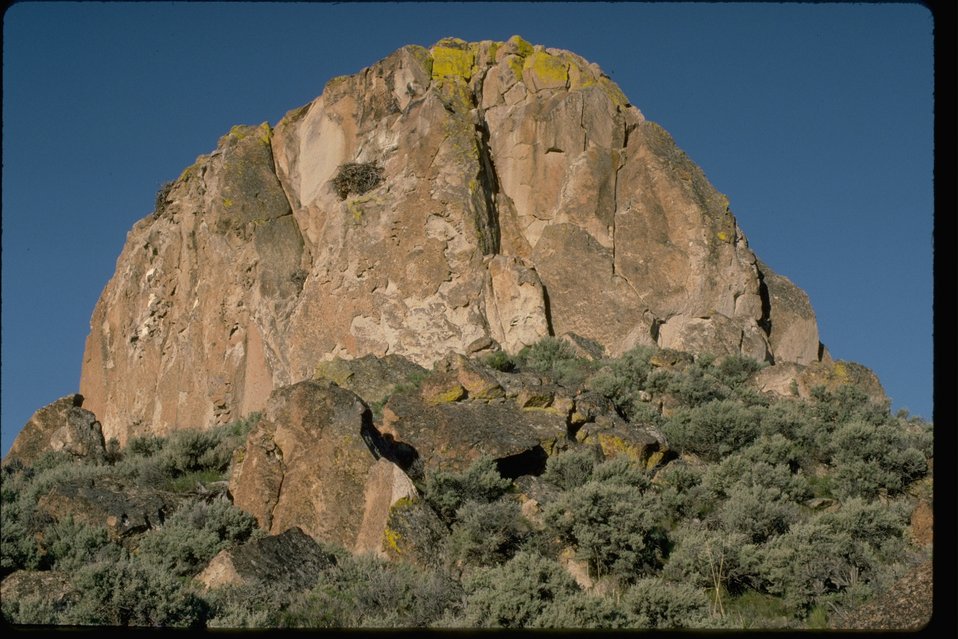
Undetermined.